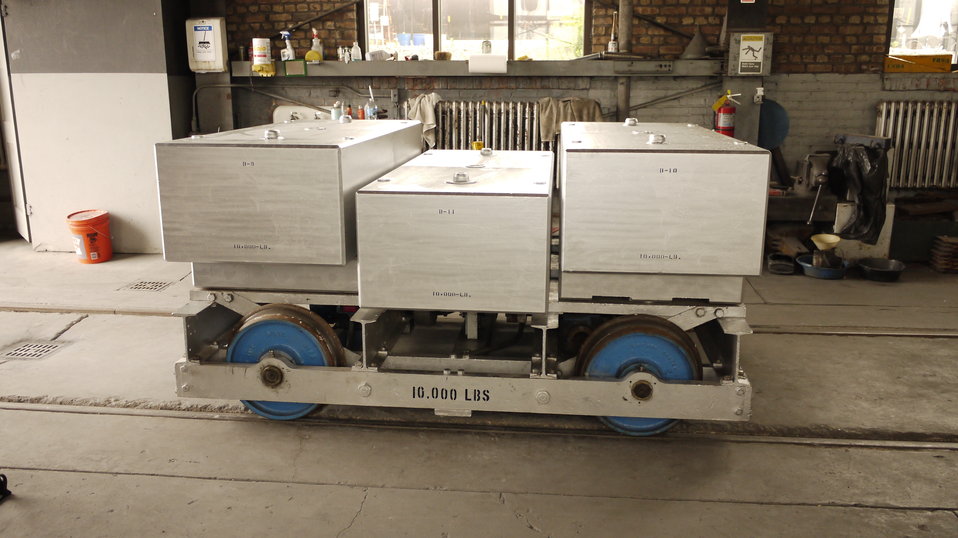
This is the 10,000 lb. test weight cart with some 10,000 lb. test weight standards loaded on the cart after the weights had been calibrated at the U.S. Department of Agriculture’s (USDA) Grain Inspection, Packers, and Stockyard Administration (GIPSA) Master Scale Depot in Chicago, IL on Jul. 2, 2013. USDA GIPSA entered into an agreement with the National Institute of Standards and Technology (NIST) and the Association of American Railroads (AAR) in 1980 transferring responsibility to USDA’s GIPSA to maintain the Master Scale facility in Chicago, IL and calibrate all the master scales in the continental U.S. annually.